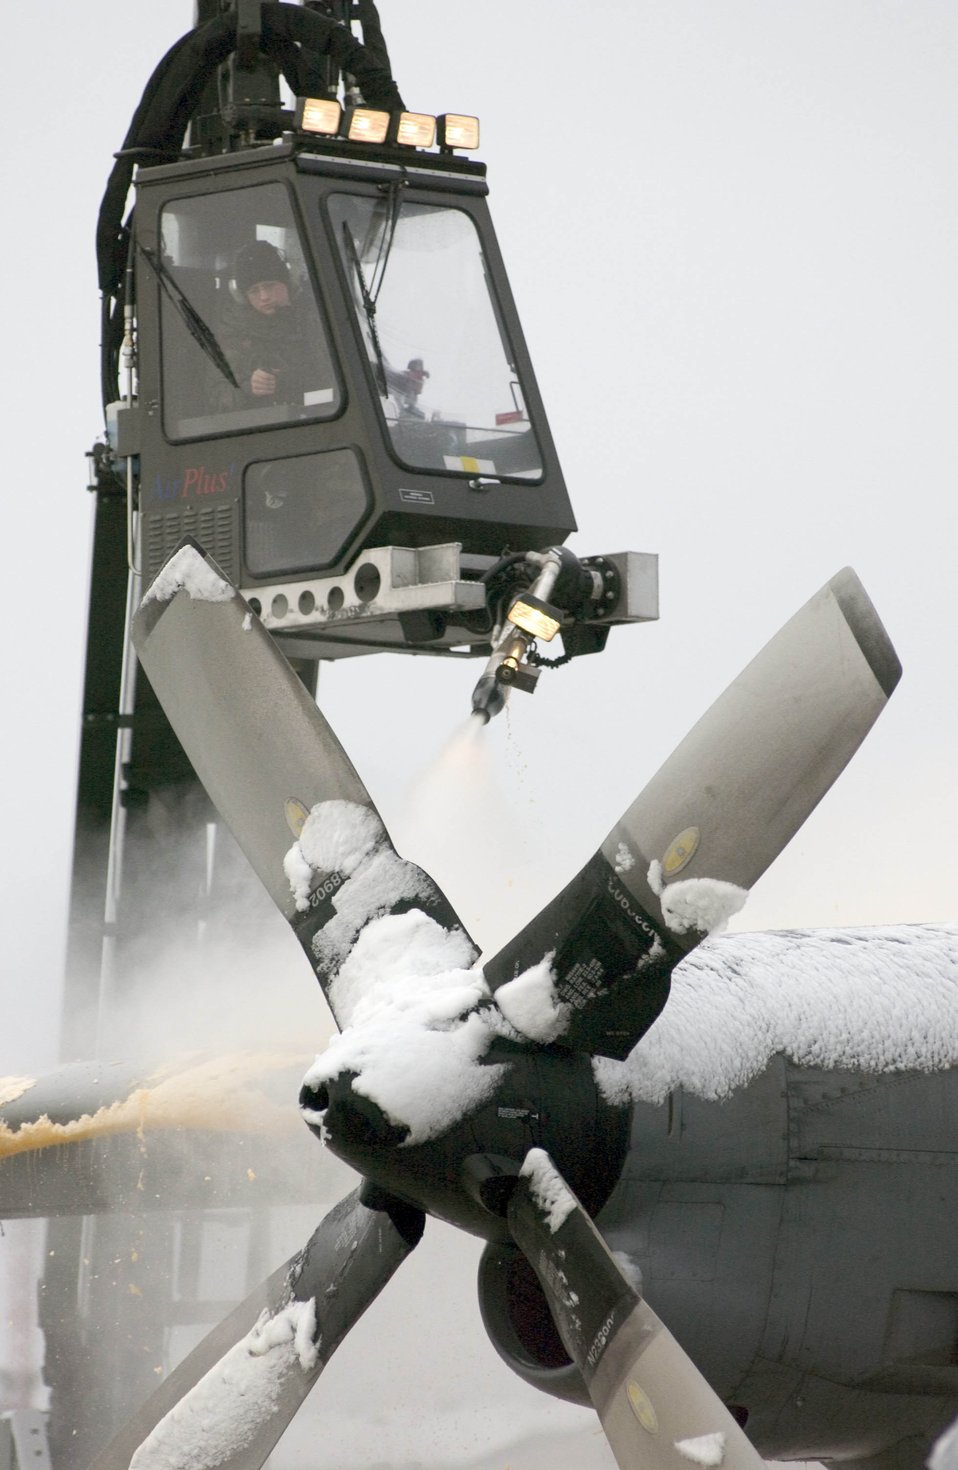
Snow job

RAMSTEIN AIR BASE, Germany -- Senior Airman Jason Ferrell clears snow from a C-130 Hercules after an early morning snow here Nov. 10. Glycol and high pressure air is used to remove the snow. Glycol, an environmental safe product is coated on the plane to help prevent any immediate snow accumulation. Airman Ferrell is an aircraft electrician assigned to the 723rd Aircraft Maintenance Squadron.